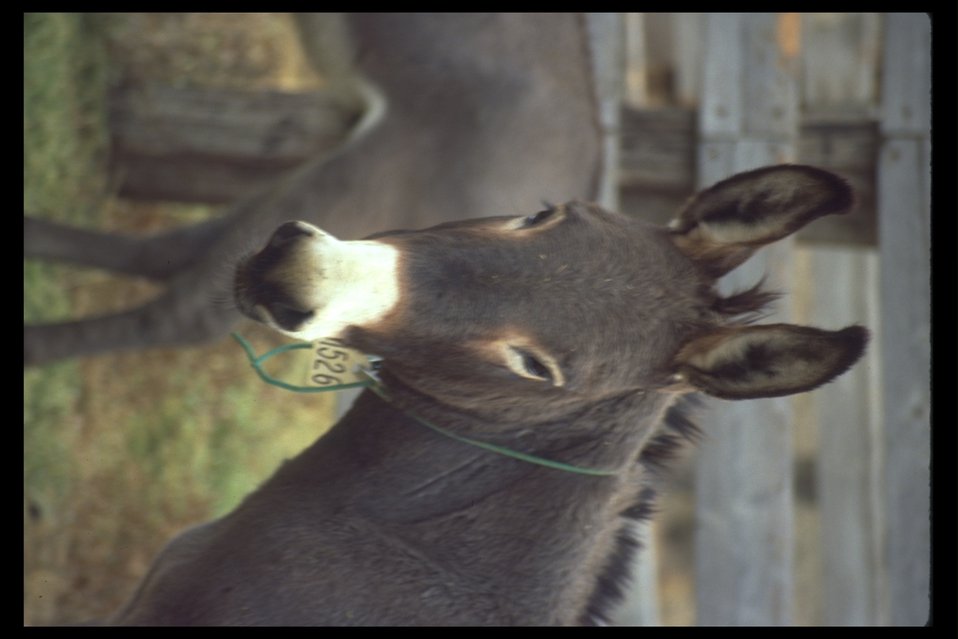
California Wild Burro awaits adoption at Burns Wild Horse Corral.